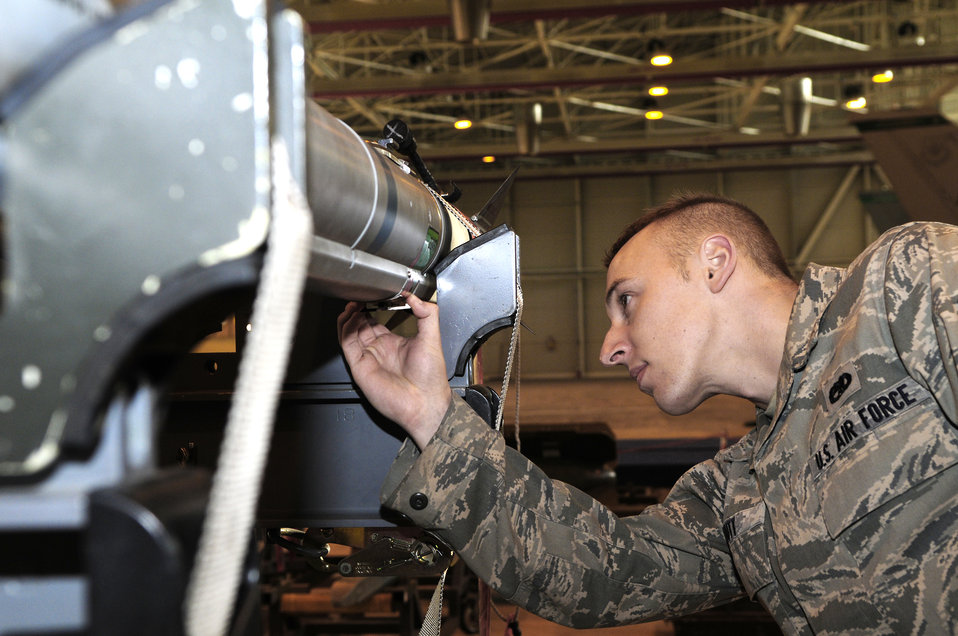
31st MXG: Air Force's top maintenance unit

Senior Airman Kyle Shutt inspects an AIM-9X missile March 2, 2011, at Aviano Air Base, Italy. Members of the 31st Maintenance Group generated 8,295 sorties in fiscal 2010. Airman Shutt is a 31st Maintenance Operations Squadron lead crew member.